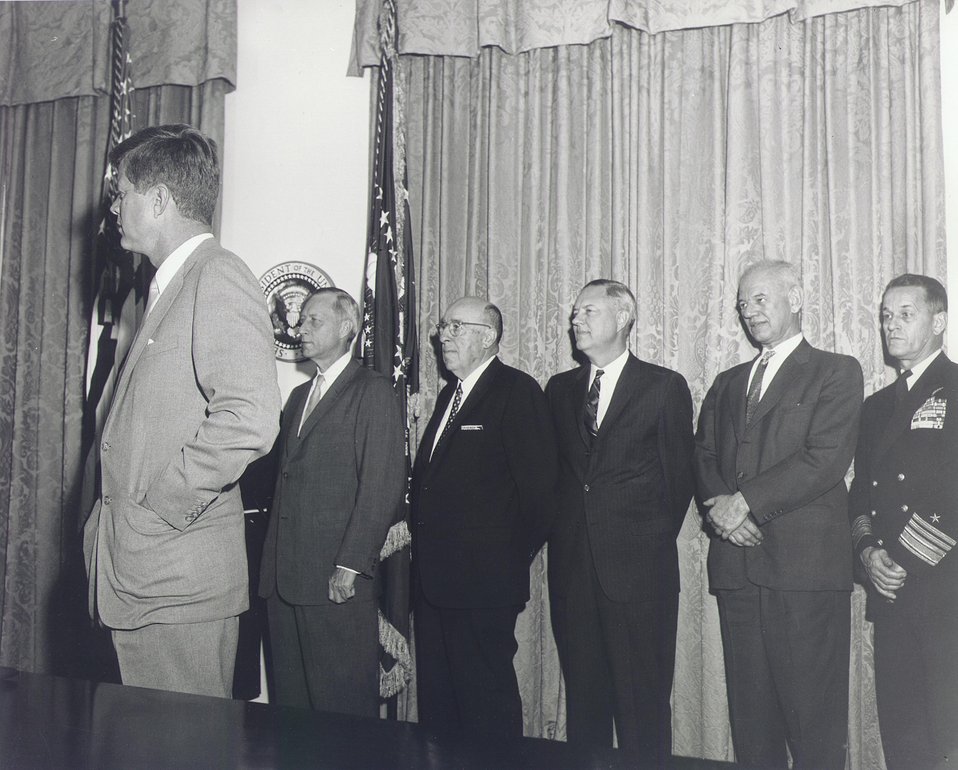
Fermi Award Ceremony for Dr. Bethe in Washington on Dec. 1, 1961.